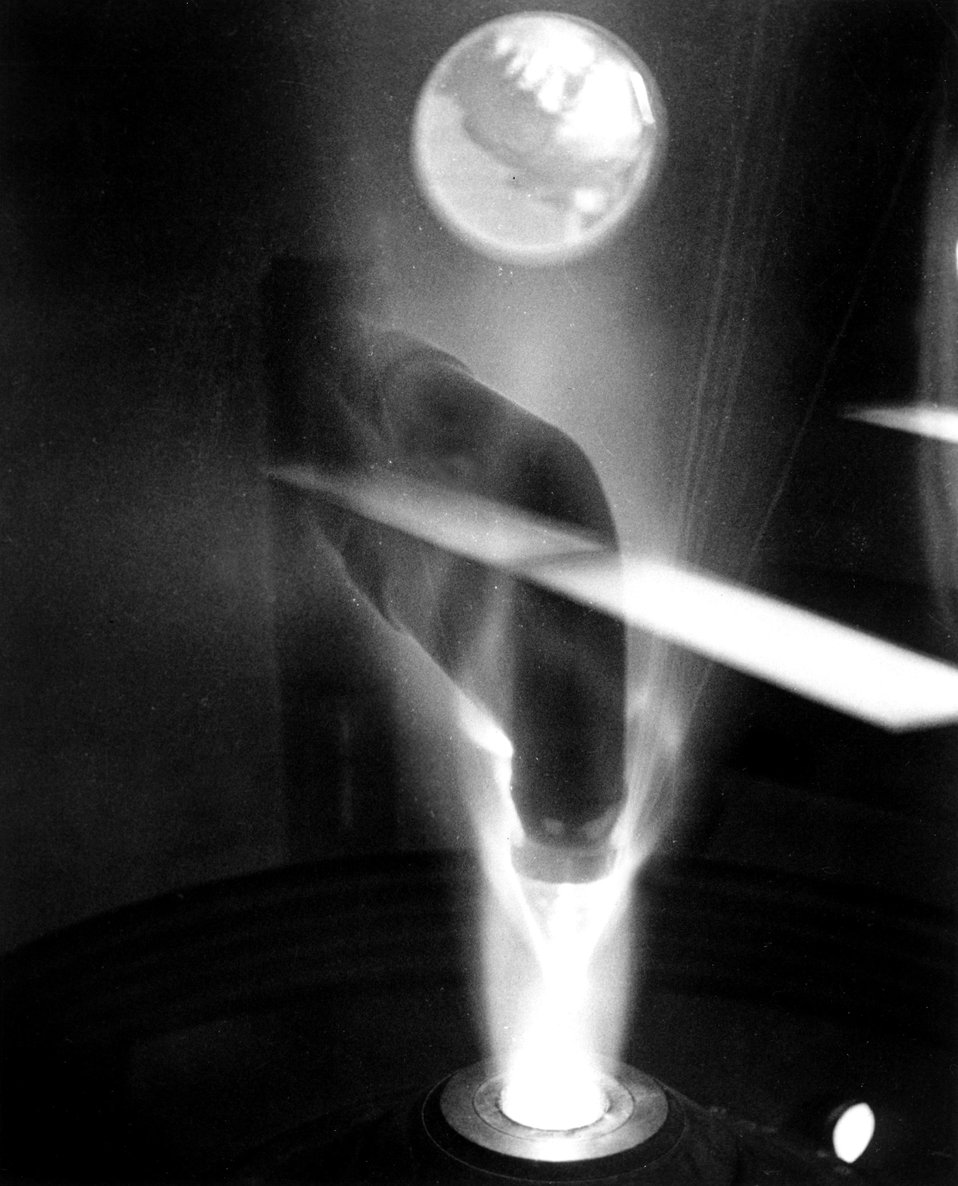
The new plasma arc facility at the AEC's Sandia Laboratories, Albuquerque, New Mexico, simulates the extremely high temperatures encountered by vehicles re-entering the earth's atmosphere from space. c. 1969